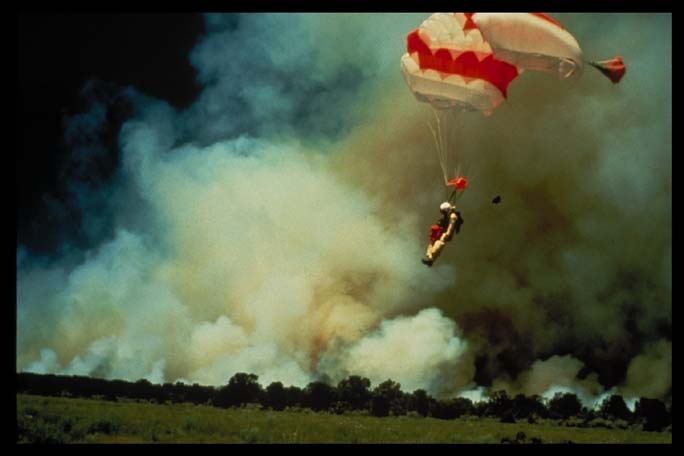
Smokejumper